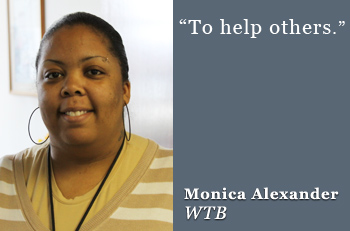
monica-alexander